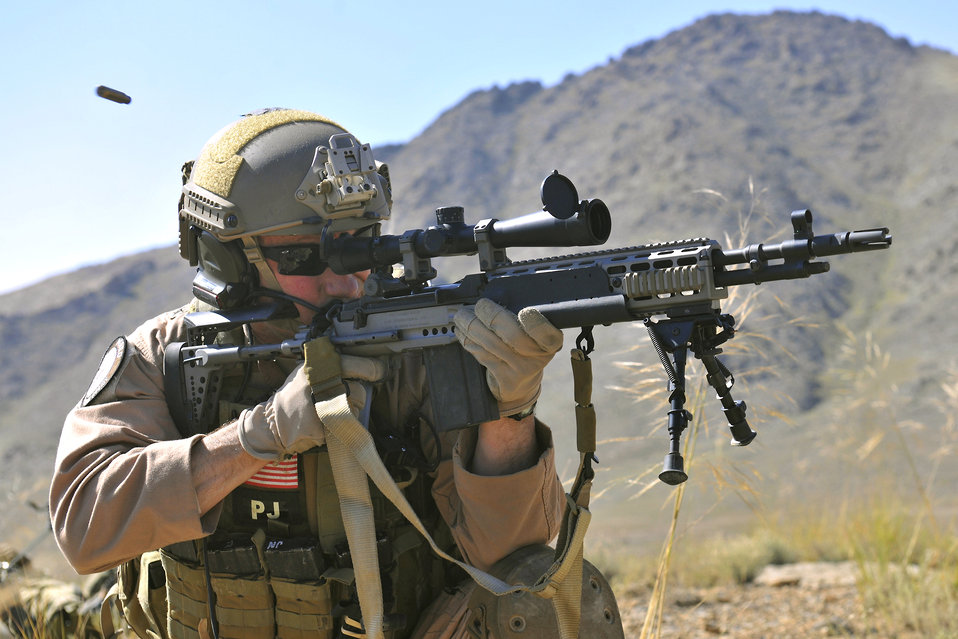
Pararescueman train to help save lives

Brig. Gen. Jack L. Briggs, the 455th Air Expeditionary Wing commander, test fires the M14, an enhanced battle rifle, during a training mission at Bagram Airfield, Afghanistan, Sept. 24, 2010. The training mission, led by the 33rd Expeditionary Rescue Squadron, provided a glimpse of what the 33rd ERQS brings to the fight.